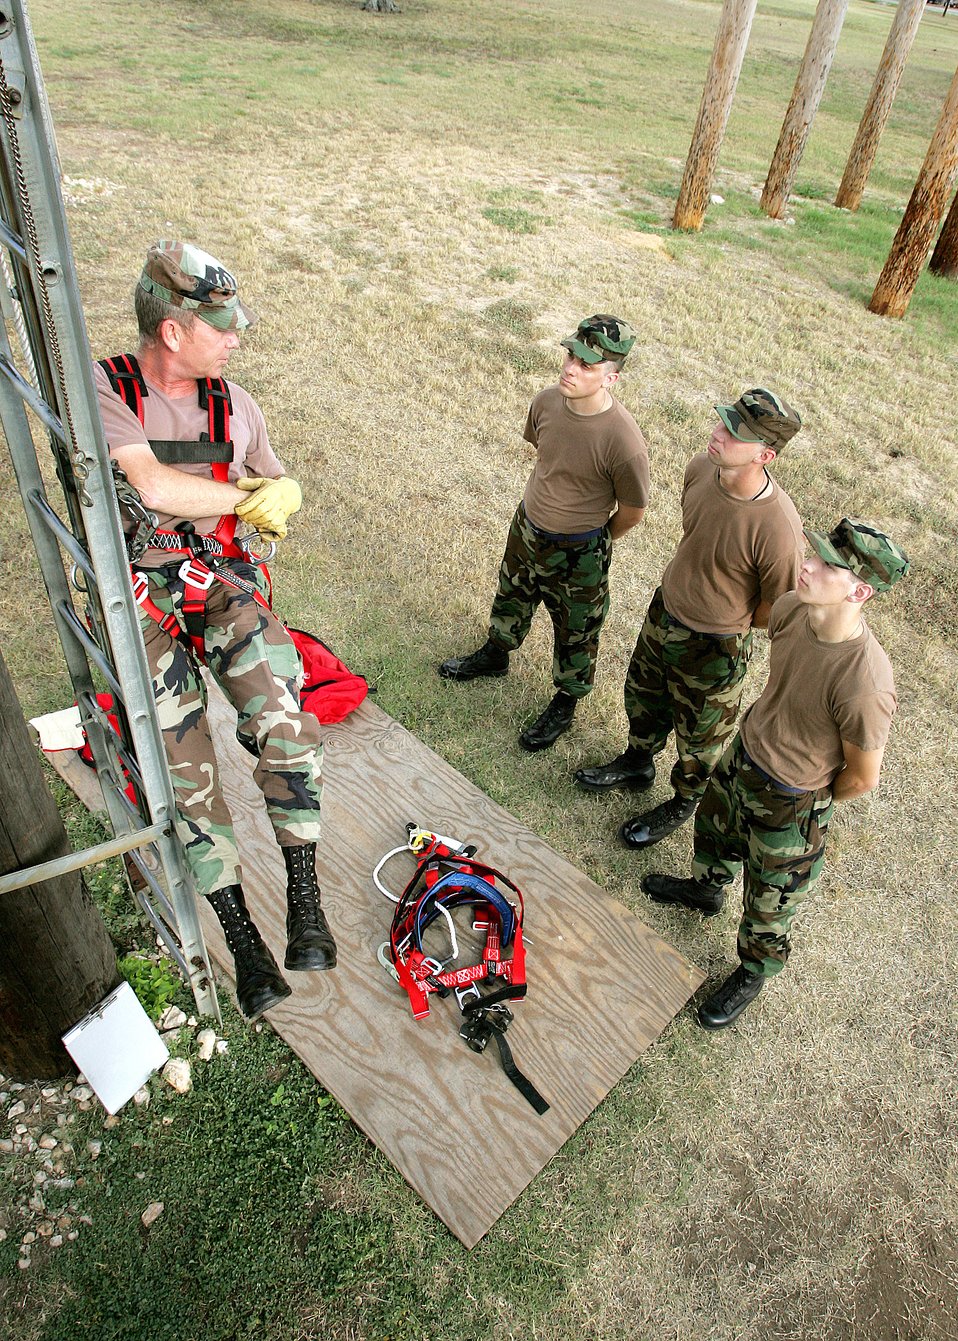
Acrophobia

Hanging from a ladder attached to a utility pole, Tech. Sgt. Michael Fettis shows Airmen at Lackland Air Force Base, Texas, a series of movements they must perform to be evaluated for acrophobia on Thursday, July 13. Six Air Force career fields require this test on the fear of heights before continuing on to technical school. Airman Basics Paul Cox, William Killebrew and James Pelletier are entering the communications career field. Sergeant Fettis is assigned to the 319th Training Squadron.